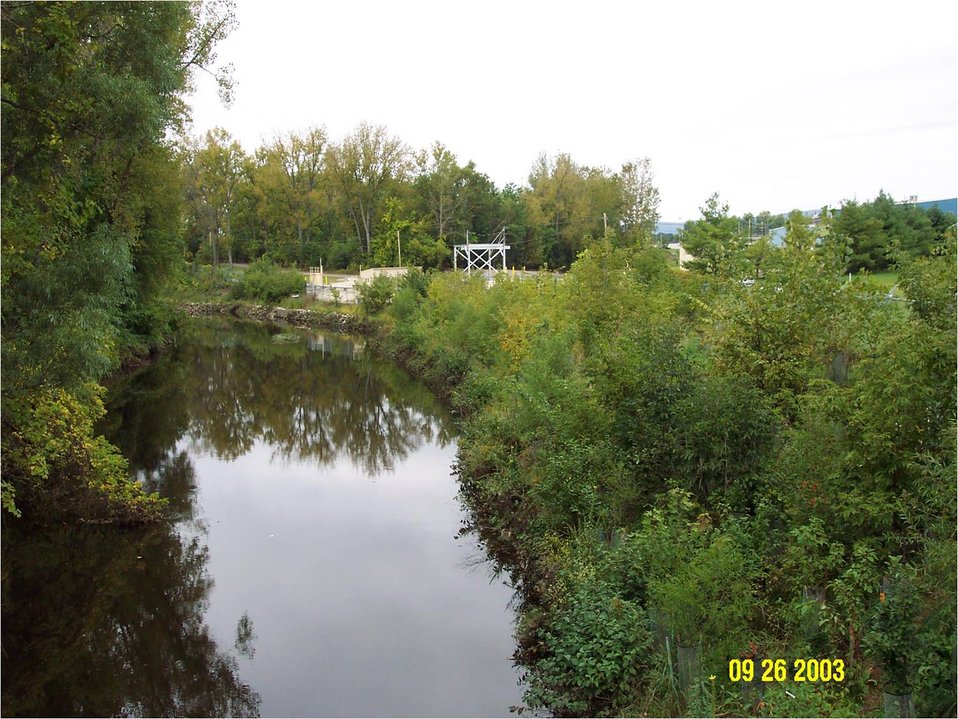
4 Years Later, September 2003 'AFTER' View from Newell Street

Successful growth just a few years later in this view of the 'half mile' cleanup section of the Housatonic.